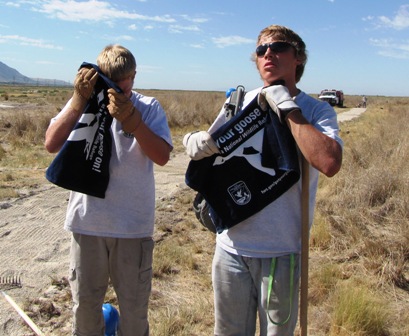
Working up a Sweat, Get Your Goose On! Style!

Two Youth Conservation Corps members cool off with their Get Your Goose On! towels after a long day trail building at Utah's Bear River Migratory Bird Refuge.